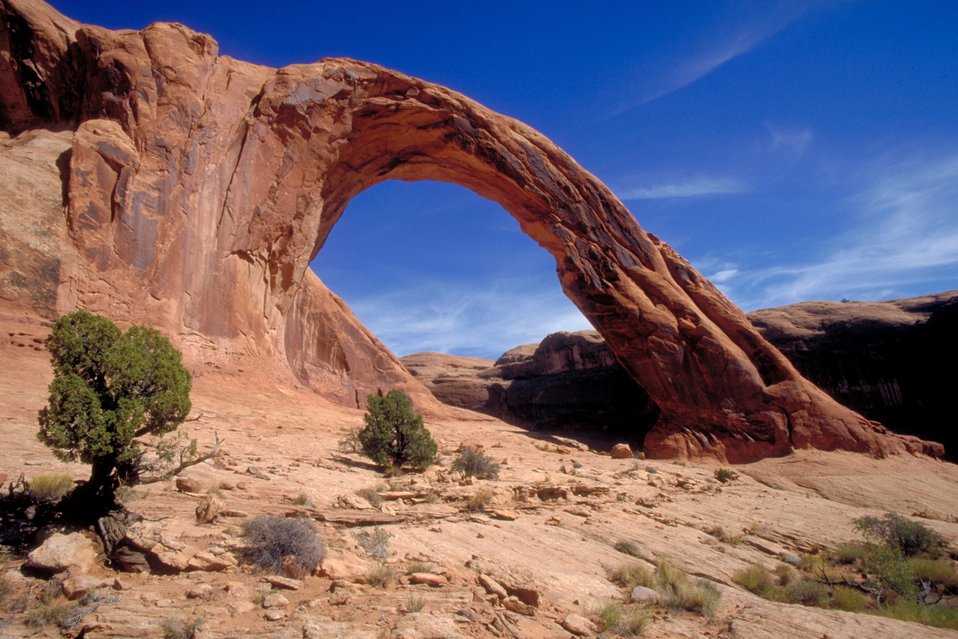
Corona Arch near Moab, Utah.